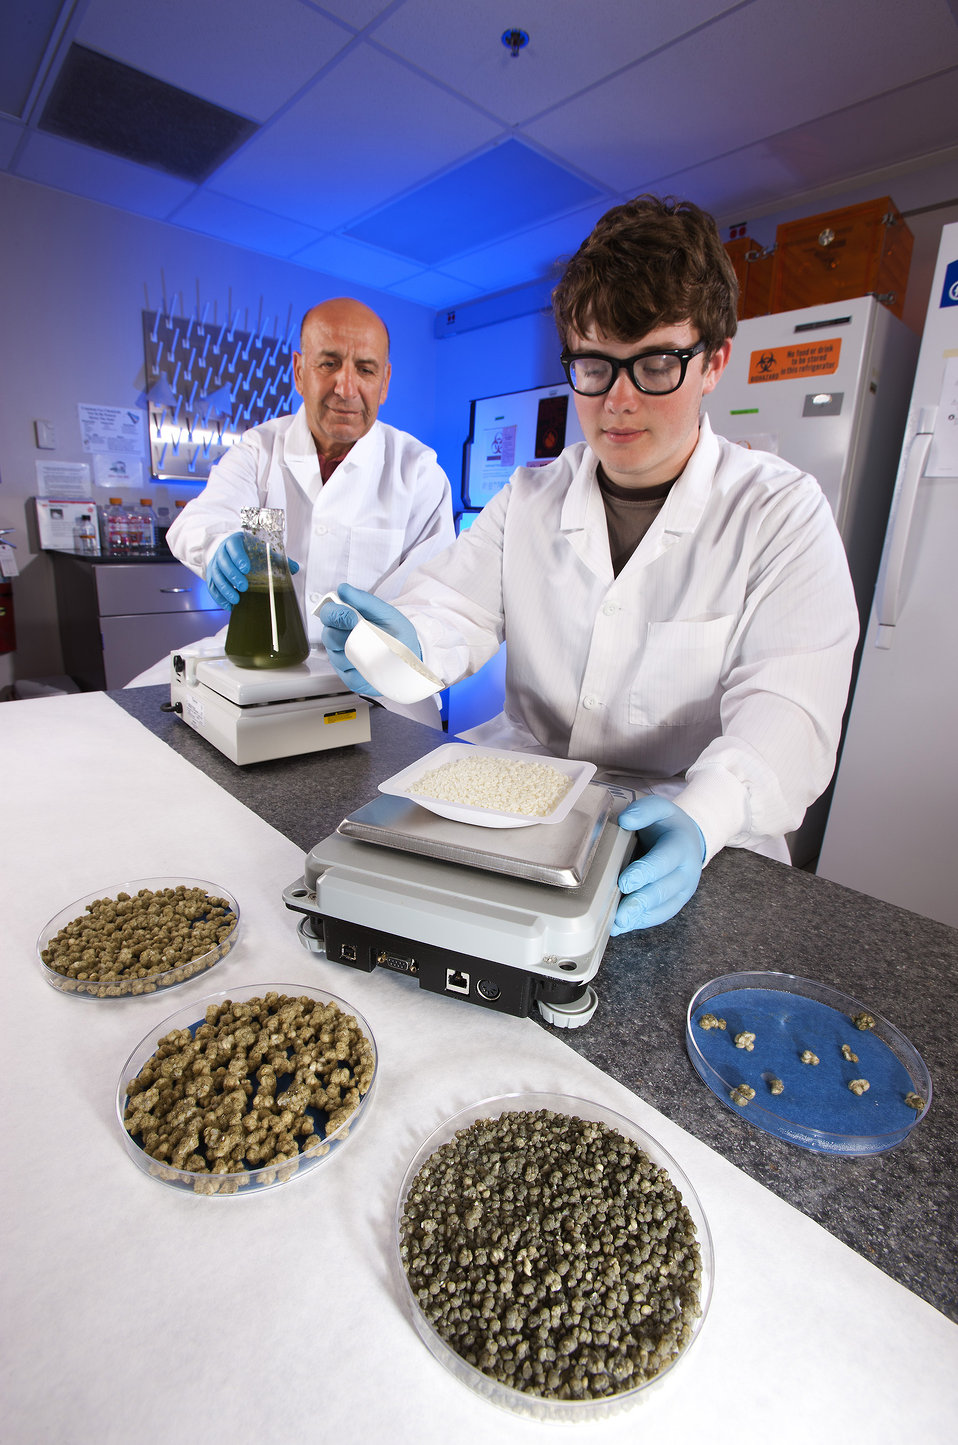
U.S. Department of Agriculture (USDA) Agricultural Research Service (ARS) plant pathologist Hamed Abbas and technician Caleb Chambers prepare bioplastic granules for field trials to control aflatoxin in corn on Sept. 21, 2003.